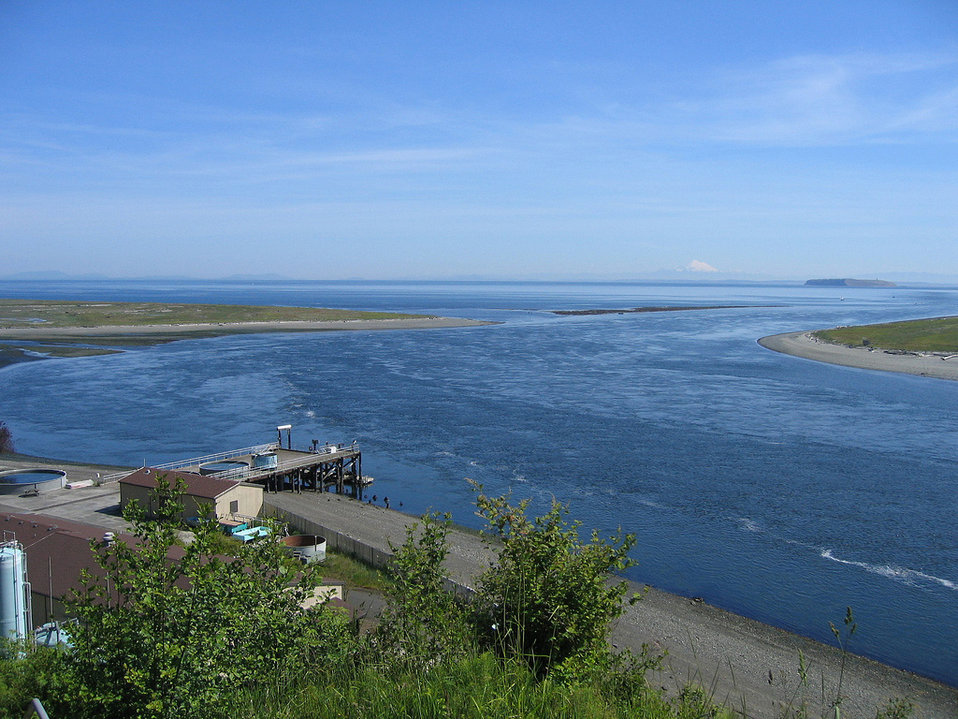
Pacific Northwest National Laboratory's Marine Sciences Laboratory, located on the Seqium Bay in Washington's Puget Sound.
The lab offers capabilities in ecotoxicology, analytical chemistry, wetland and coastal ecology, fisheries, ocean processes, instrumentation/remote sensing, risk assessment, and biotechnology/remediation.